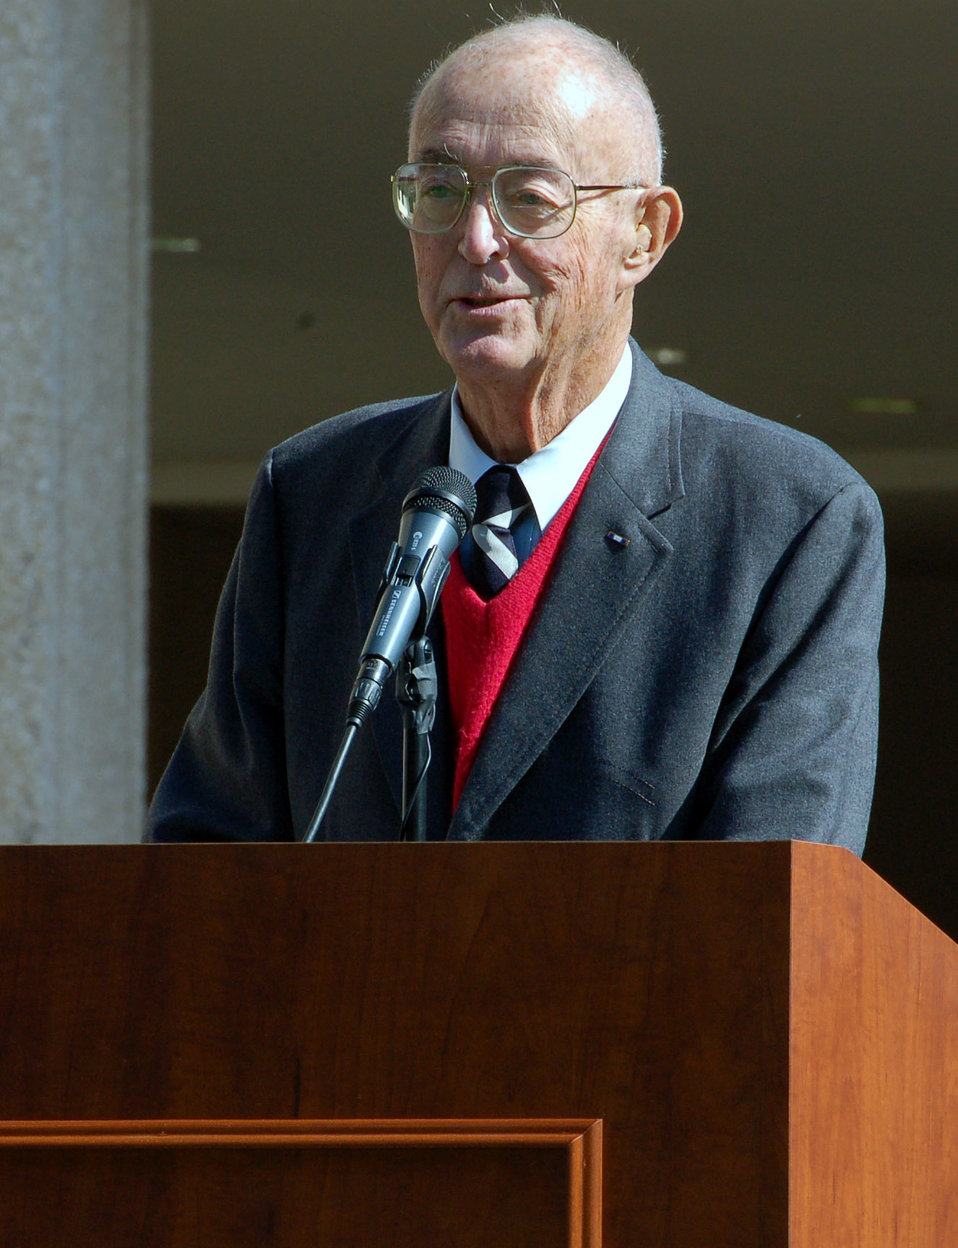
50 years of medical excellence

Retired Lt. Gen. (Dr.) Paul Myers speaks at the Wilford Hall Medical Center's 50th Anniversary Ceremony Nov. 16. at Lackland Air Force Base, Texas